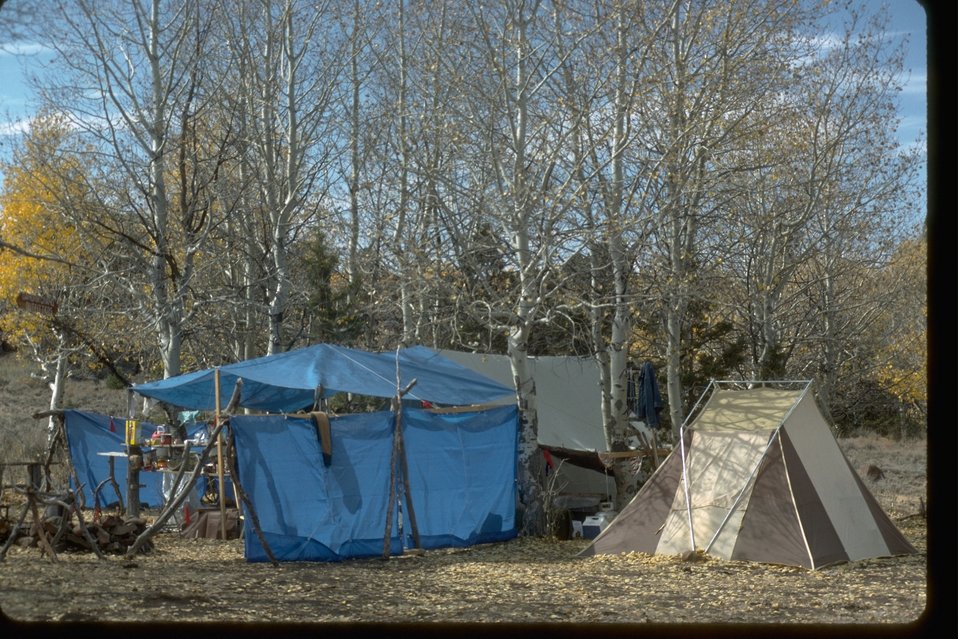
Hunter's Camp.